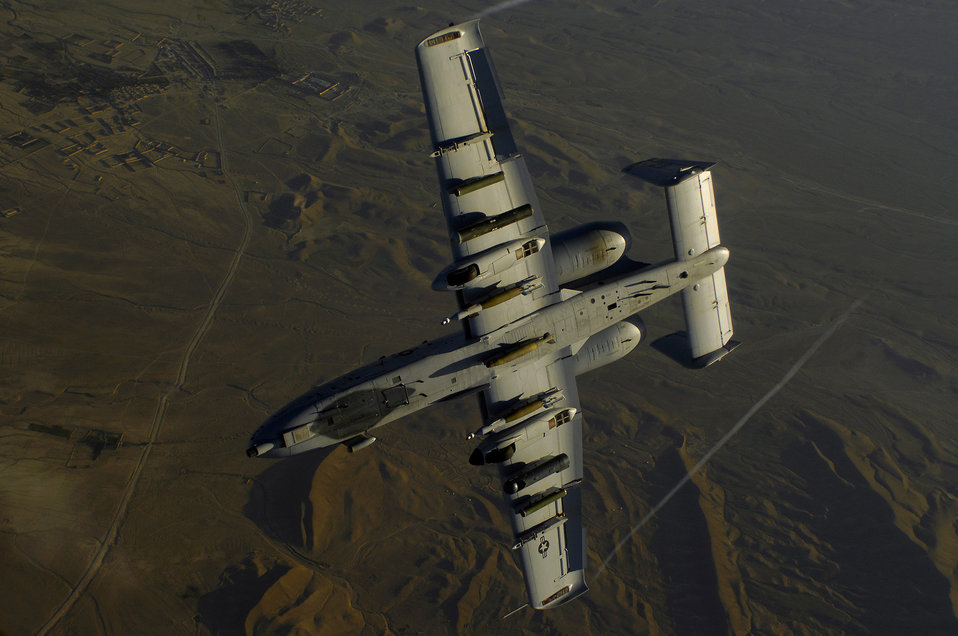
June 5 airpower summary: A-10s strike enemy locations

An Air Force A-10 Thunderbolt II returns to the fight after receiving fuel May 29 from a KC-135 Stratotanker during a mission over Afghanistan. The A-10 is deployed in support of Operation Enduring Freedom.